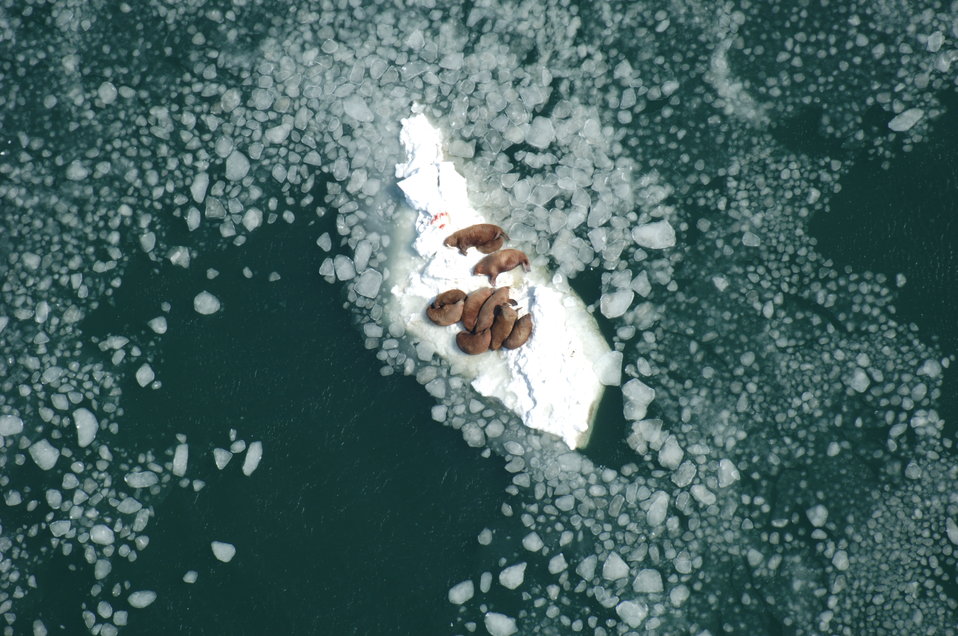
Walrus Cows on Ice Nursing Calves

Walrus cows resting on sea ice south of Nunivak Island, Alaska, while nursing their calves.